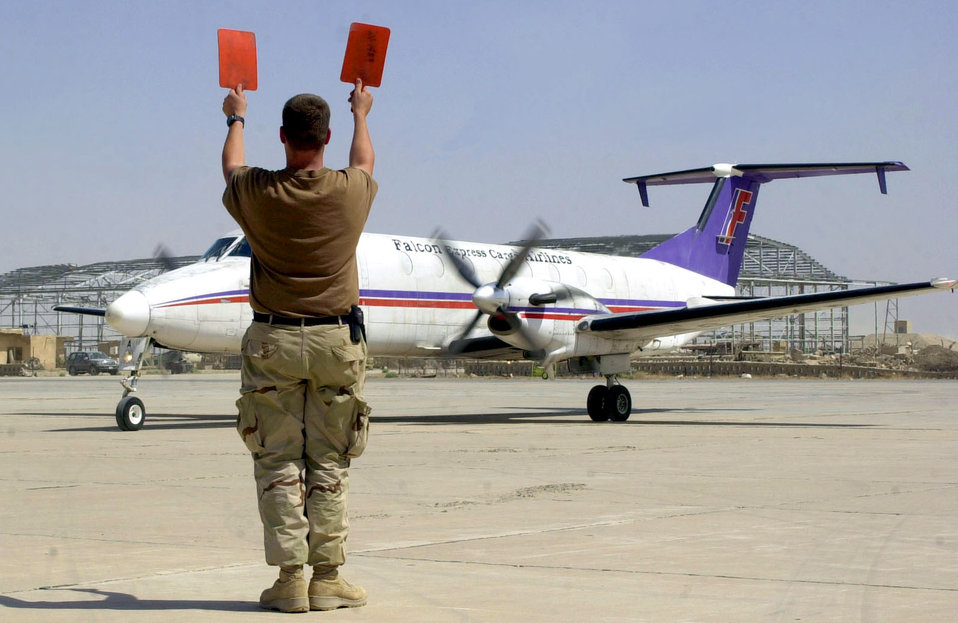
Commercial cargo

TALLIL AIR BASE, Iraq (AFPN) -- Staff Sgt. Christopher Chandler marshals in the first commercial aircraft to land here. The Beechcraft 1900 turbo-prop landed here June 12 and is operated by Falcon Express Cargo of Dubai, United Arab Emirates. Chandler is assigned to the 407th Expeditionary Logistics Readiness Squadron's transient alert crew.